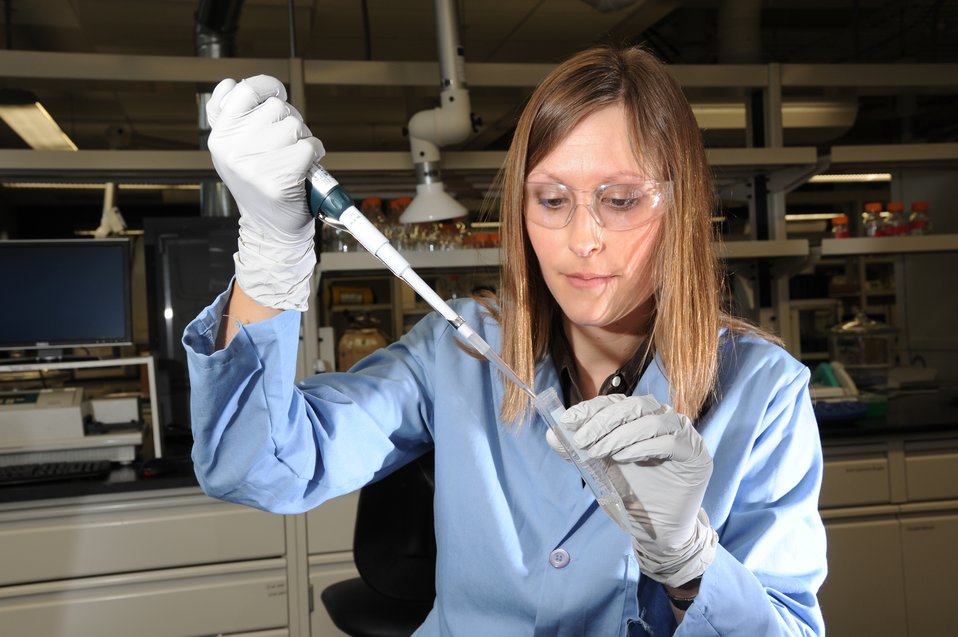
Idaho National Laboratory researchers are studying ways to economically process, transport and formulate raw biomass that will feed into a biofuels production facility.